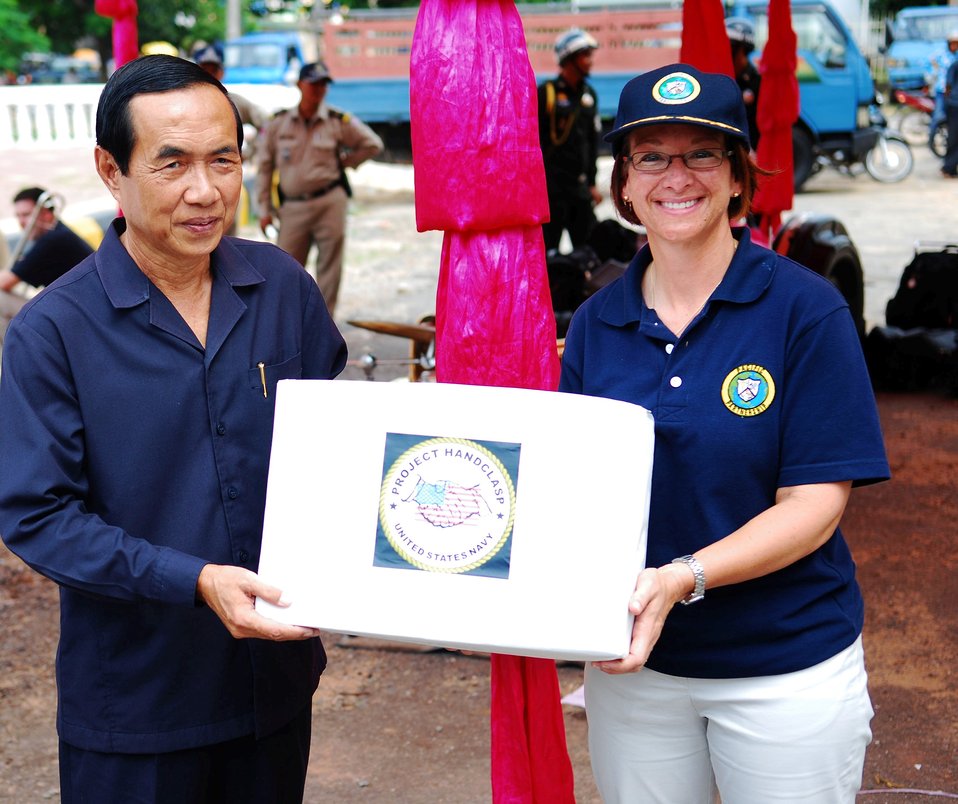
PP2010 Commander Capt. Lisa M. Franchetti Holds a Box of Medical Supplies

Commander of Pacific Partnership 2010, Capt. Lisa M. Franchetti, holds a box of medical supplies donated on behalf of Project Handclasp and Latter-day Saint Charities to Cambodian health officials during a ceremony in Sihanoukville, Cambodia, highlighting the delivery of 32 pallets of medical kits to the Cambodian people on June 26, 2010. The Military Sealift Command hospital ship USNS Mercy (T-AH 19) is in Cambodia for Pacific Partnership 2010, the fifth in a series of annual U.S. Pacific Fleet humanitarian and civic assistance endeavors designed to strengthen regional partnerships.